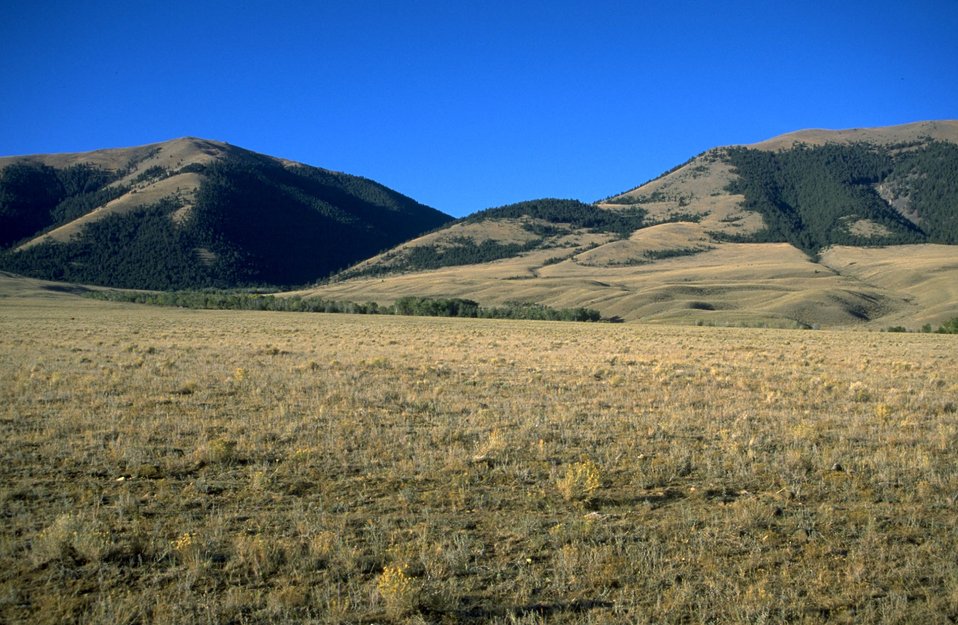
Grassy hills with mountains in the background